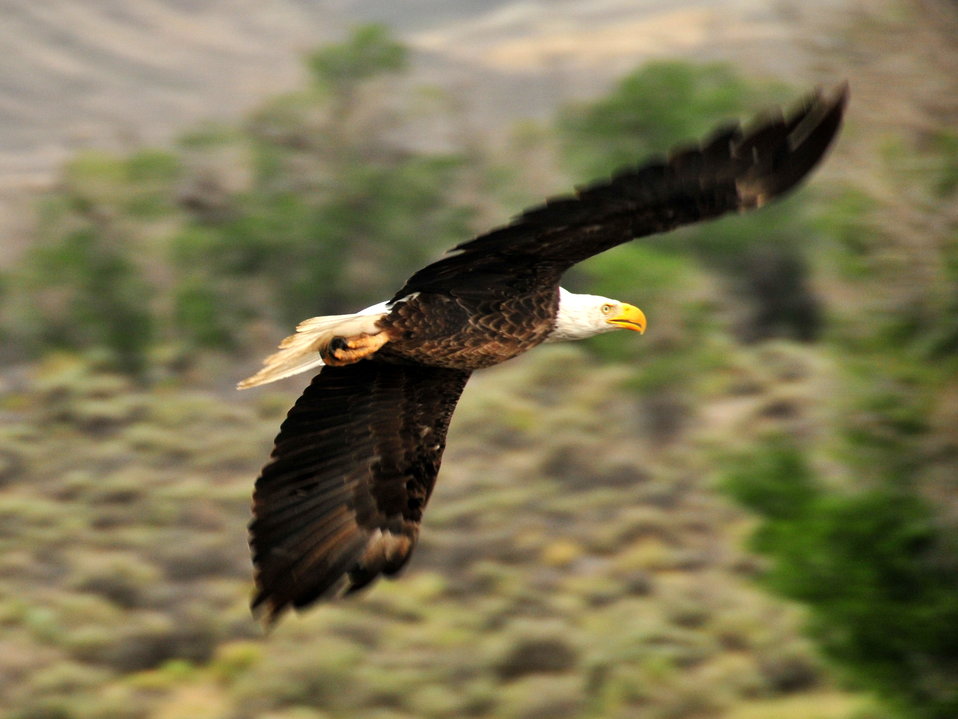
Bald Eagle Soaring on Seedskadee NWR

A bald eagle soars over the Green River on Seedskadee NWR.